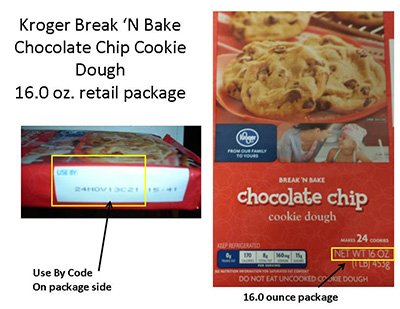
RECALLED – Chocolate Chip Cookie Dough

August 25, 2013 – Product Recall – Product Recall of Kroger’s Break ‘n Bake Chocolate Chip Cookie Dough Due to Peanut Butter Cup Cookie Dough Mispacked Into Chocolate Chip Cookie Dough Packages.